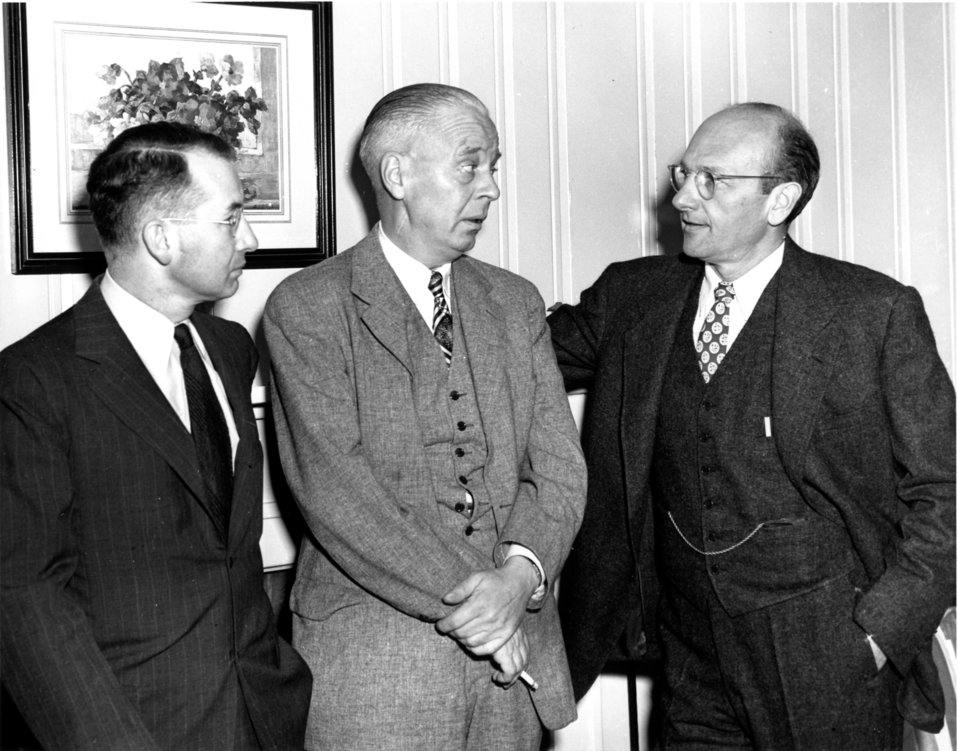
Notable persons at Oak Ridge